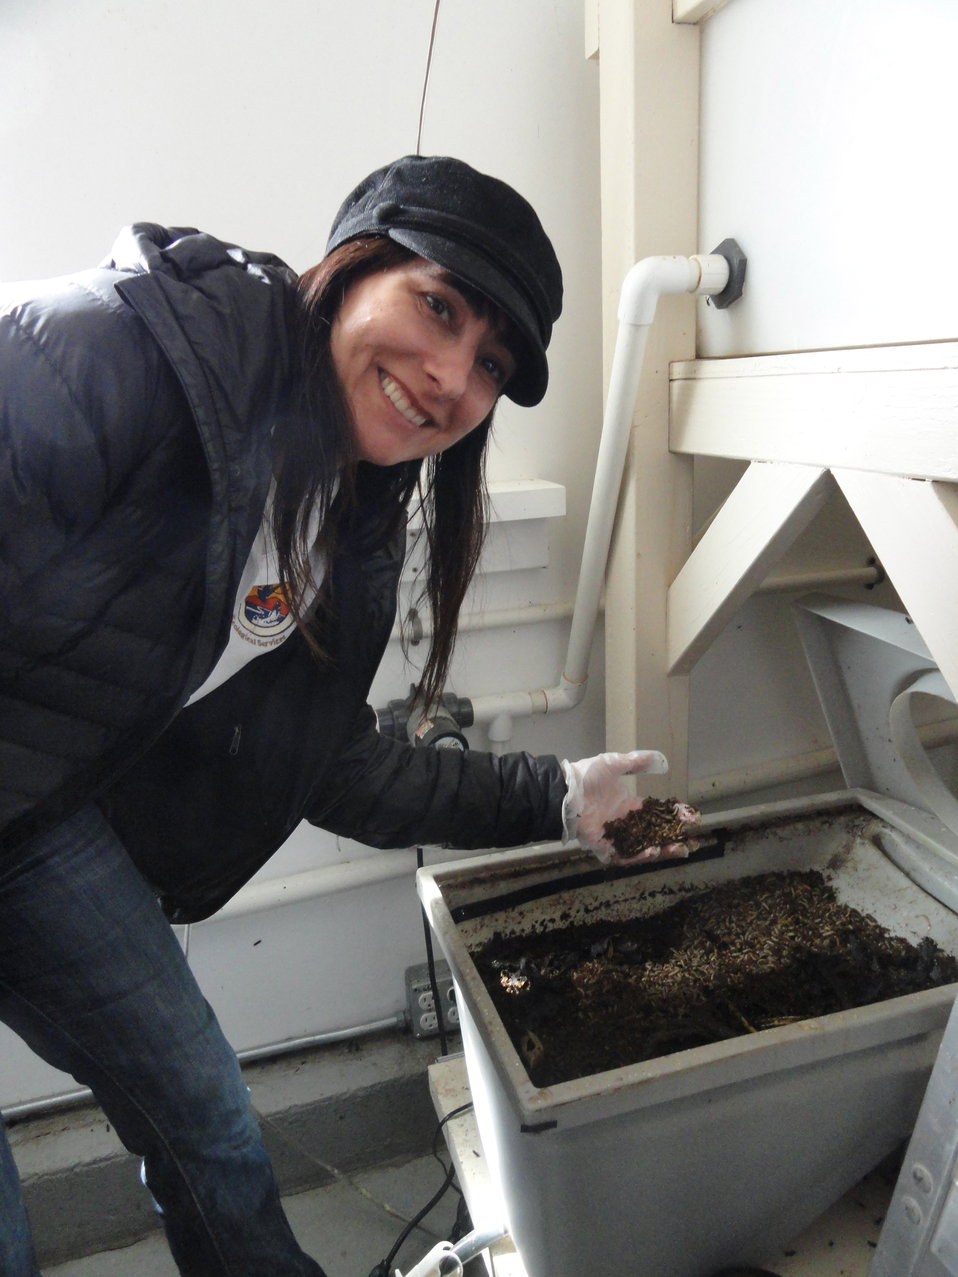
Visiting Saratoga National Fish Hatchery

In April of 2014, regional office employees visited Saratoga National Fish Hatchery to learn more about its efforts towards recovering the Wyoming toad (Bufo baxteri).

The hatchery adopted a unique role in becoming the first unit in the National Fish Hatchery System to become involved in rearing endangered amphibians. The Wyoming toad was a common sight on areas of the Laramie Plains, Albany County, Wyoming, into the early 1970s but the species' populations crashed in the mid-1970s. The Wyoming toad was listed as endangered by the U.S. Fish & Wildlife Service in January 1984. Found only in southwestern Wyoming, the Wyoming toad is considered the most endangered amphibian in North America. The hatchery maintains a captive population for breeding, rearing, and refugia, and the offspring from this program will be used for reintroduction efforts.